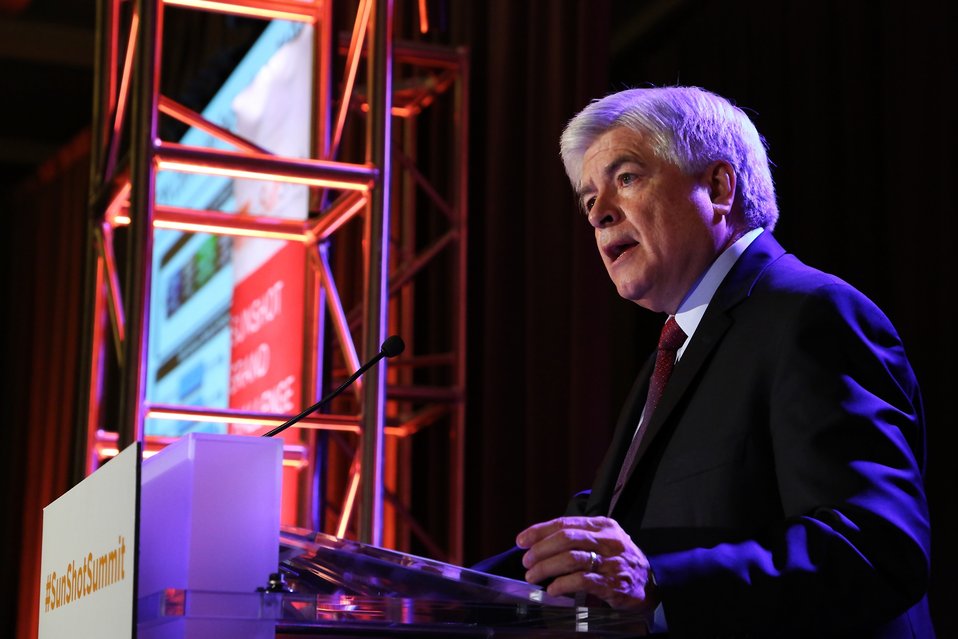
Keynote Session 5

Dr. Dan Arvizu, National Renewable Energy Laboratory shares compelling stats during his keynote on the rapid growth of the solar industry.